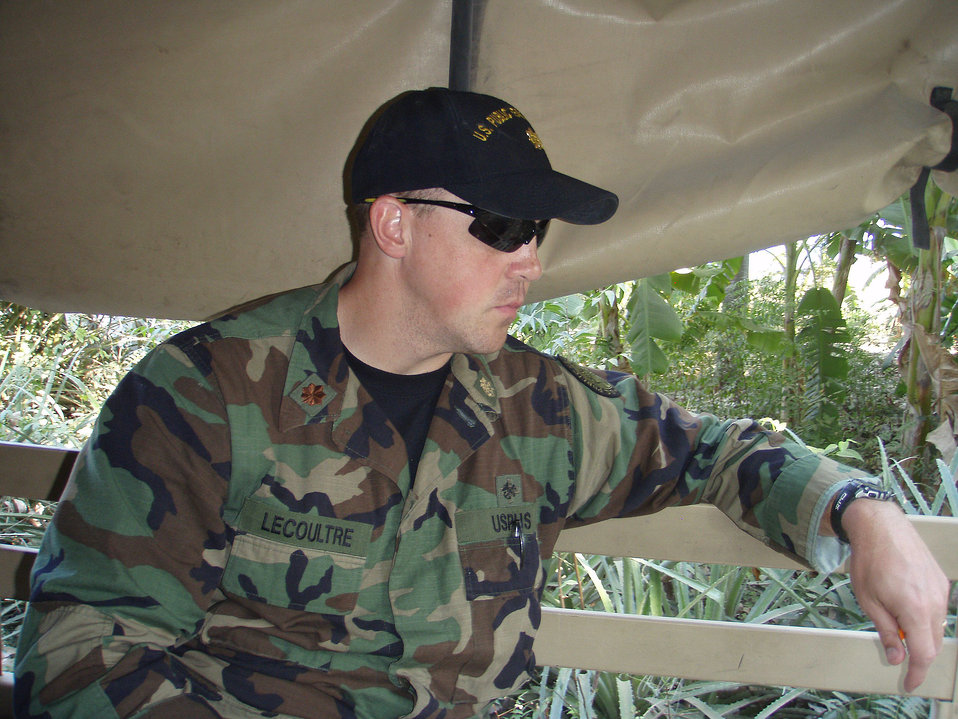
Photographed by U.S. Public Health Service (USPHS) Lt. Cmdr. Gary Brunette, this image depicts USPHS Lt. Cmdr. LeCoultre, as he was inspecting the emergency relief supplies in a Haitian town shortly after the country's devastating earthquake in January, 2010, after having been transported to the region by the Navy's Wasp-class amphibious assault ship, the USS Bataan.